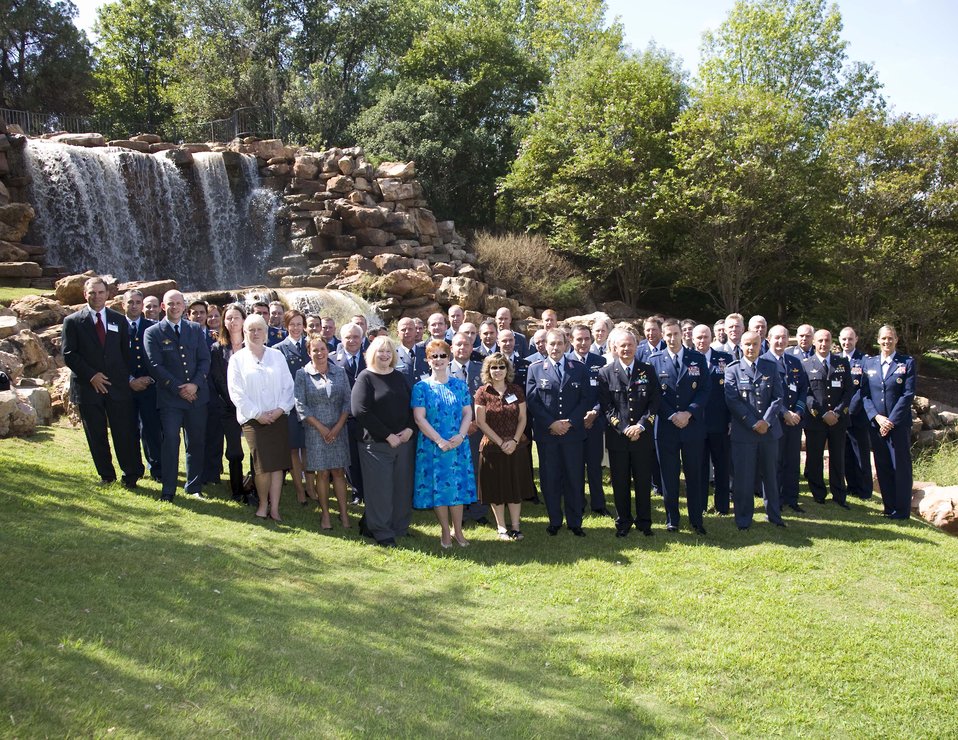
ENJJPT steering committee meets

Members of the Euro-NATO Joint Jet Pilot Training Program Steering Committee pose in front of The Falls in Wichita Falls, Texas, Sept. 25, 2009. During their meeting at Sheppard Air Force Base, Texas, they discussed the flow of student pilots, instructor pilot training, leadership and command opportunities, maintenance statistics and plans for ENJJPT.